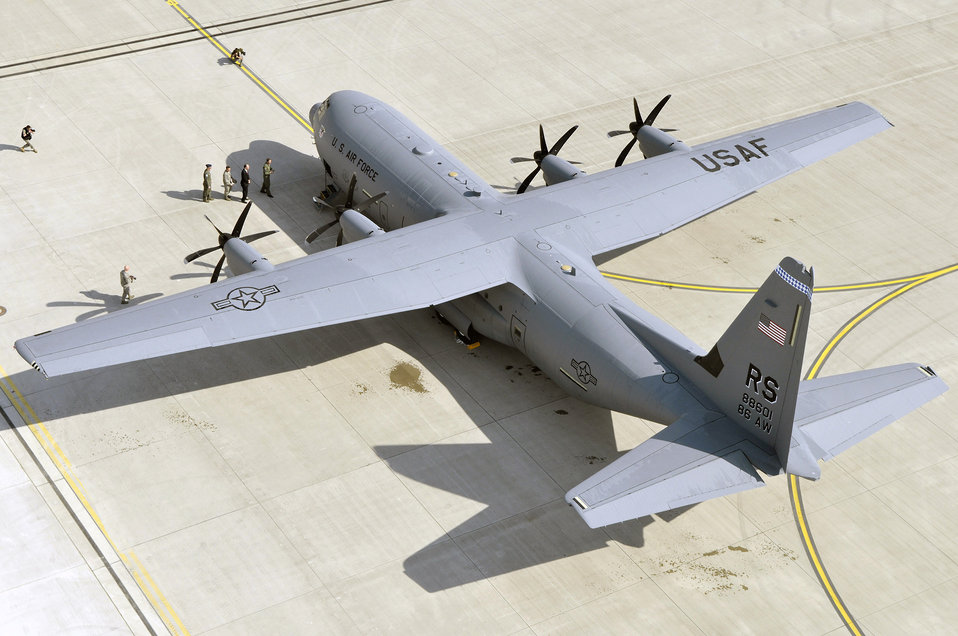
Ramstein welcomes new J-model C-130

A C-130J Super Hercules arrived at Ramstein Air Base, Germany, April 7 during a ceremony that not only honored the arrival of the new aircraft at Ramstein, but also heralded a new era in operations for the 86th Airlift Wing.